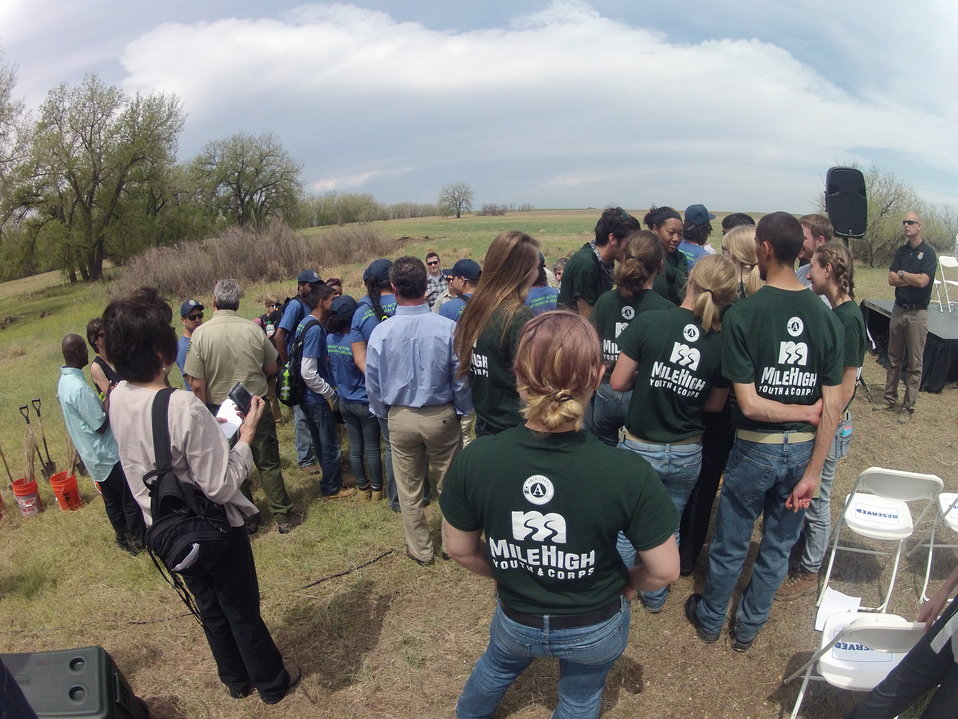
Secretary Jewell Announces $6.7 for Youth Conservation Jobs

Local youth conservation workers wait to begin working with Interior Secretary Sally Jewell on planting cottonwood trees at Denver's Rocky Mountain Arsenal National Wildlife Refuge.